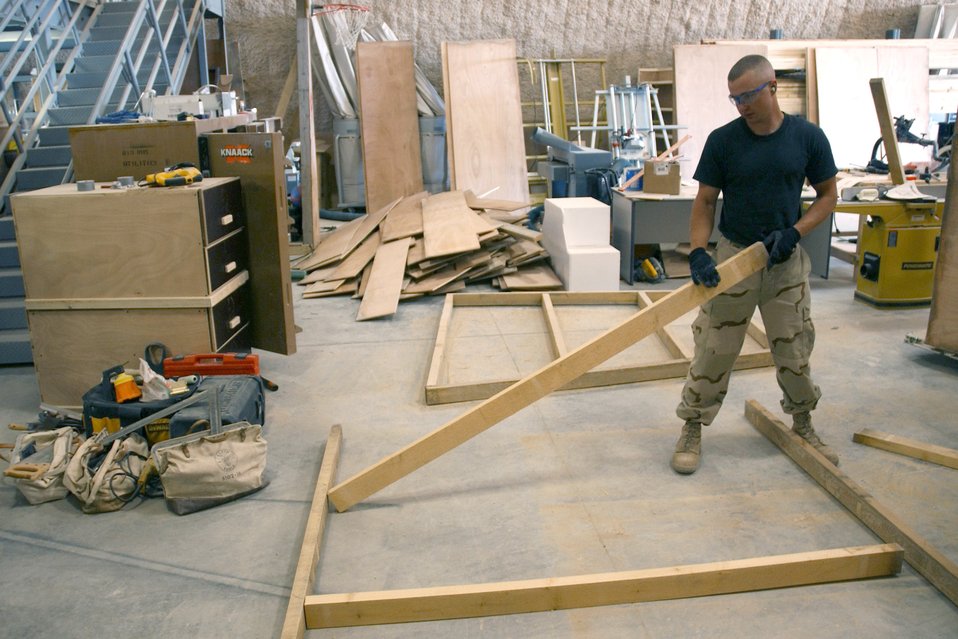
Building crates

Staff Sgt. Benjamin Jensen builds baggage crates at the passenger terminal at a deployed location in southwest Asia, March 8, 2006. The crates are used to transport the baggage of forward deploying servicemembers. Sergeant Jensen is assigned to the 379th Expeditionary Civil Engineer Squadron. He is deployed from Mountain Home Air Force Base, Idaho.